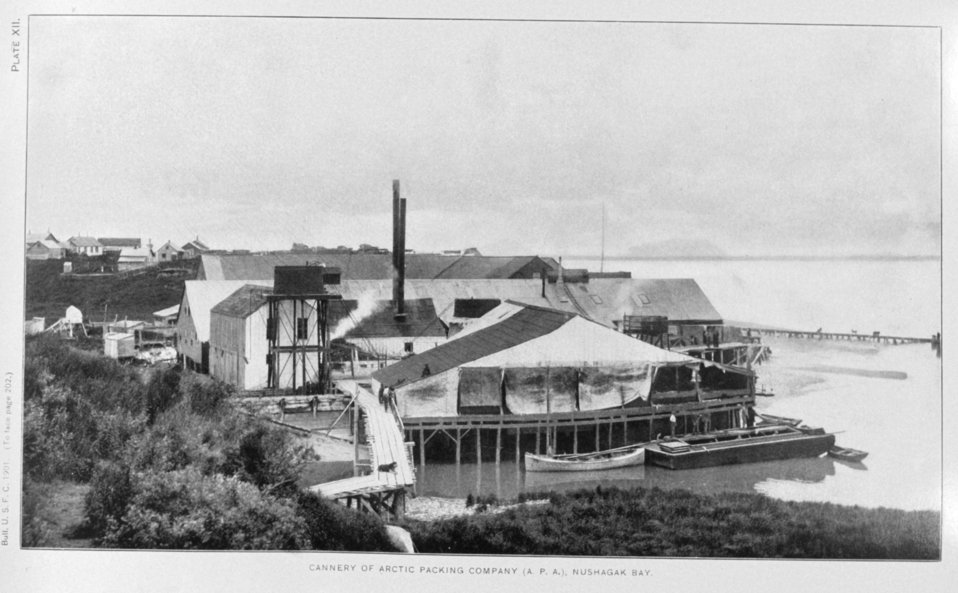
Cannery of Arctic Packing Company (A. P. A.), Nushagak Bay. In: 'Alaska Salmon Investigations,' by Jefferson F. Moser, p. 202, 1902. Washington , Government Printing Office. Library Call No. G945 M98.